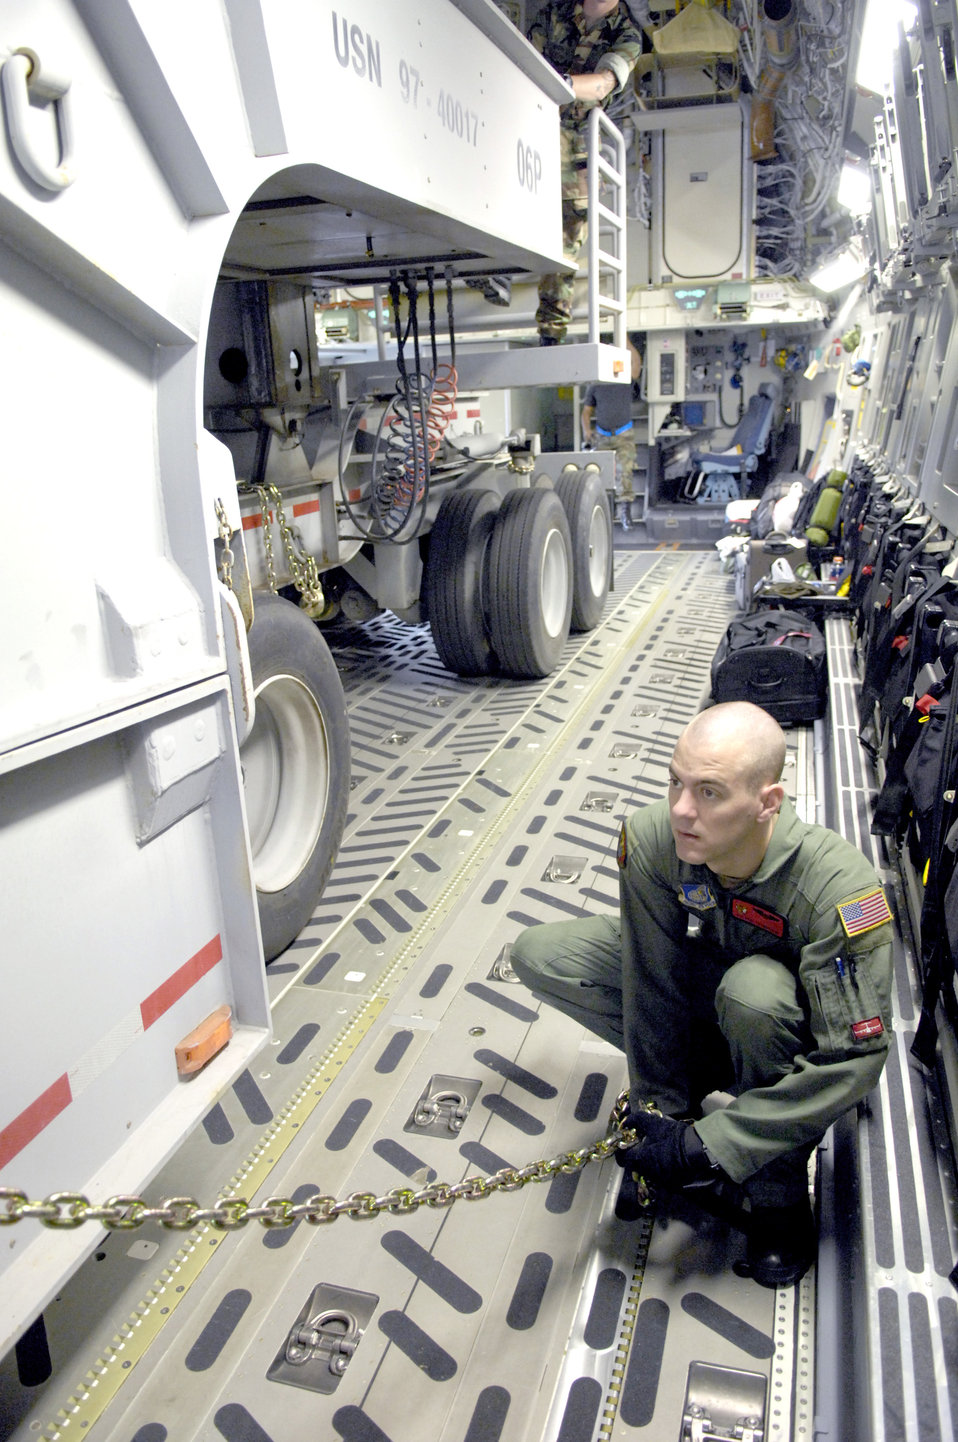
C-17 reaches dry dock

Airman 1st Class Paul Trowbridge secures a dry dock transport vehicle to the floor of a C-17 Globemaster III Dec. 2 at Hickam Air Force Base, Hawaii. The flight was the first operational movement of a dry dock transport by a C-17. Airman Trowbridge is a loadmaster assigned to the 535th Airlift Squadron.